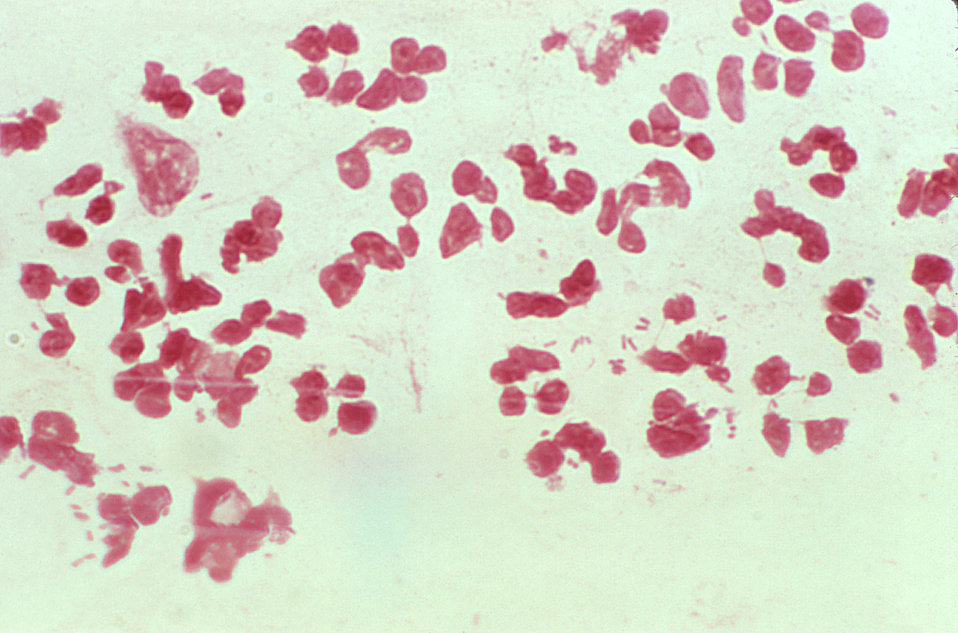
This photomicrograph of a Gram-stained urethral exudate sample from a male with urethritis, revealed the presence of pleomorphic extracellular organisms. The culture was found to be negative for the presence of Neisseria gonorrhoeae, unlike PHIL 2308, which proved to be positive for N. gonorrhoeae.